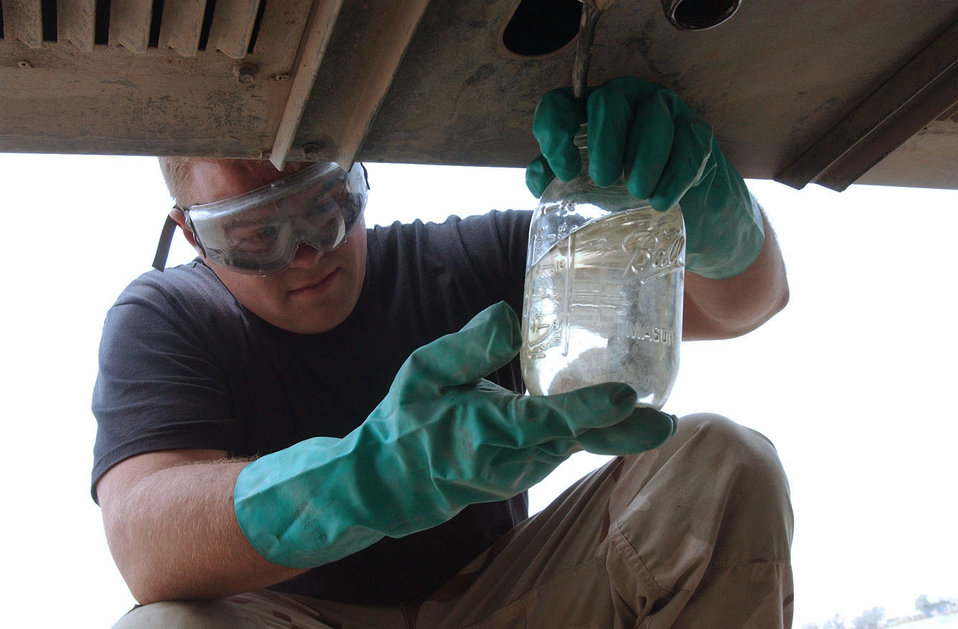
Fuels Airmen cultivate Balad farm

BALAD AIR BASE, Iraq -- Airman 1st Class Phillip Norton inspects a sample of fuel to see if it is clean and clear. Airmen of the 332nd Expeditionary Logistics Readiness Squadron's fuels management flight here monitor and sample fuel to ensure it is suitable for aircraft use. Airman Norton is a fuels distribution operator and is deployed from Davis-Monthan Air Force Base, Ariz.